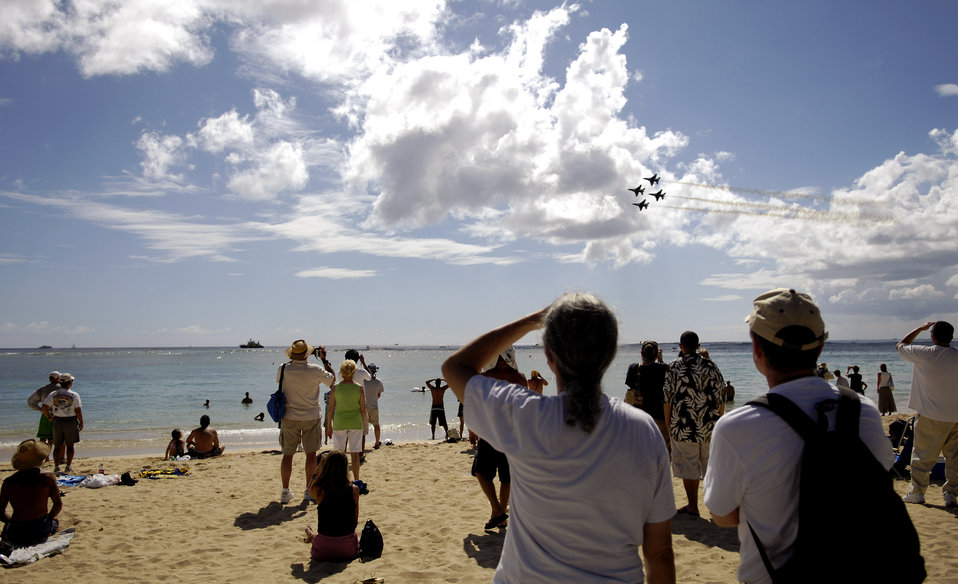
Thunderbirds fly above island paradise

Spectators watch as the Air Force Thunderbirds demonstration team perform their aerial demonstration practice Sept. 13 in Waikiki, Hawaii. The Thunderbirds performed the practice session to prepare for their show Sept. 15 as part of Air Force Week Honolulu.